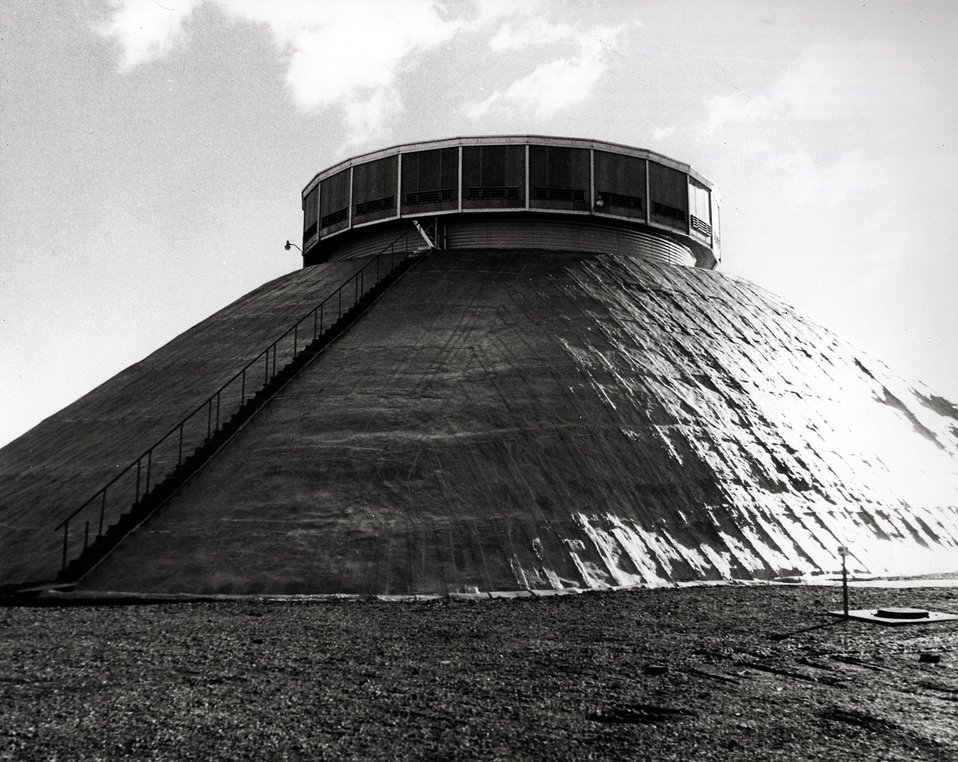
Exterior view of the ZPPR containment building at the Atomic Station in Idaho. c.1972